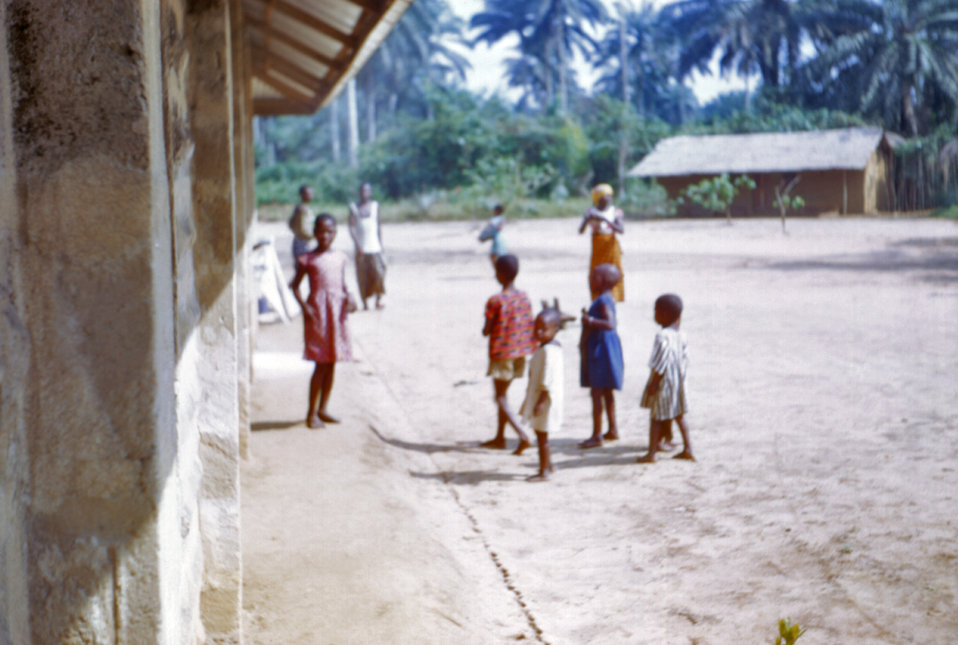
This photograph was taken inside a Nigerian refugee relief camp during the Nigerian-Biafran civil war of the late 1960s.